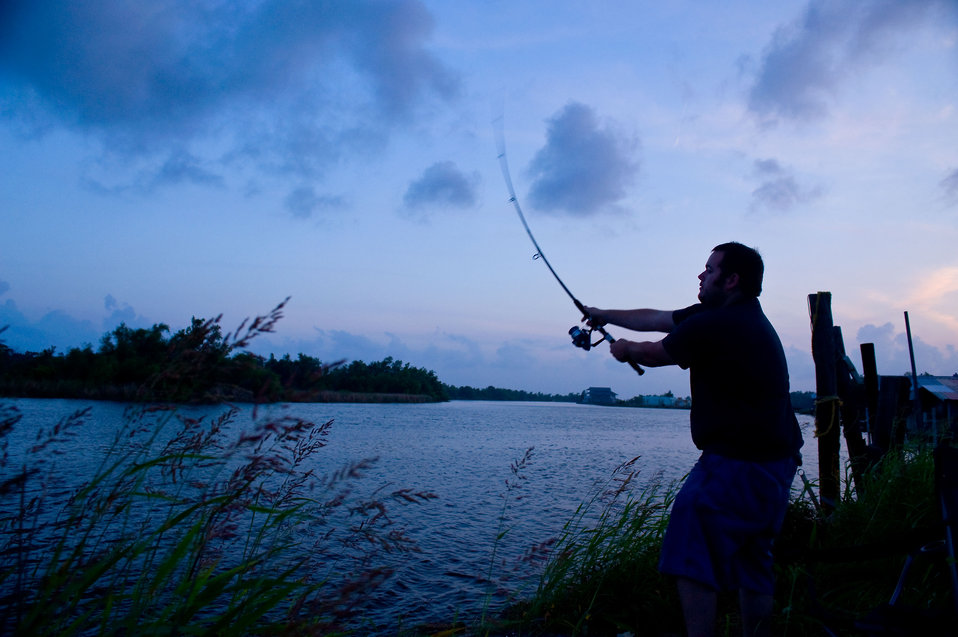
A way of life.

May 12, 2010. Bayou Gauche, La.